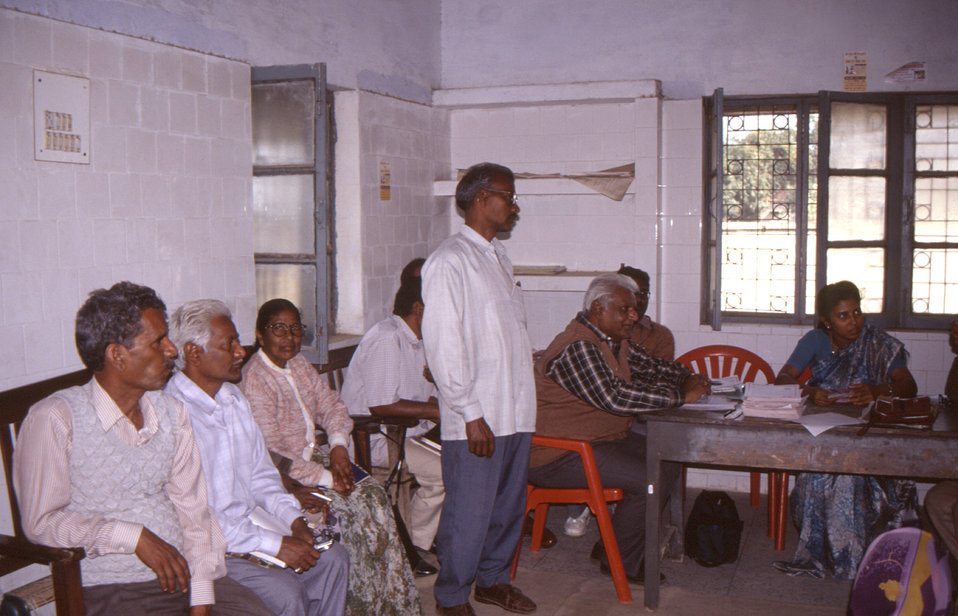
Depicted in this 2000 photograph were Indian health care workers in the country's Deoria District, as they were receiving training about the protocols associated with the STOP Transmission of Polio (STOP) immunization initiative. Since the program's inception in the fall of 1998, the STOP Teams have worked in over 50 countries. In the first years of the program, most STOP team members worked primarily to bolster acute flaccid paralysis (AFP) surveillance, support 'national immunization' days, and conduct polio case investigation and follow-up. STOP team members are recruited and trained primarily by CDC, however, once on assignment, they are under the supervision of either WHO or UNICEF.